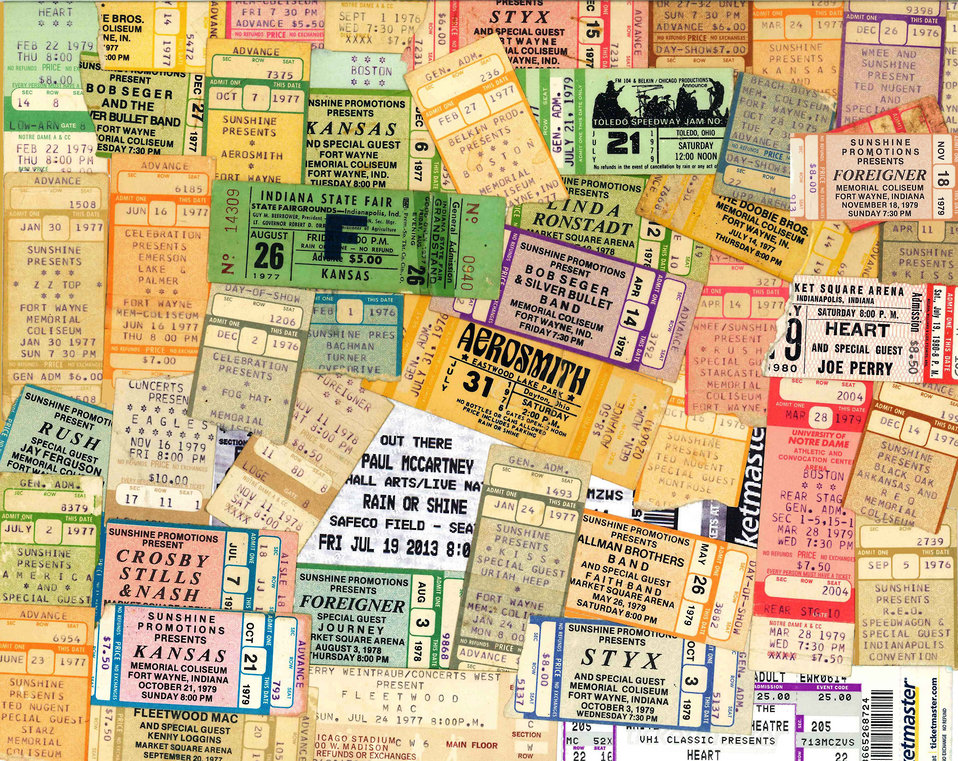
Background concert ticket stubs

A collage of concert ticket stubs for use as a background.